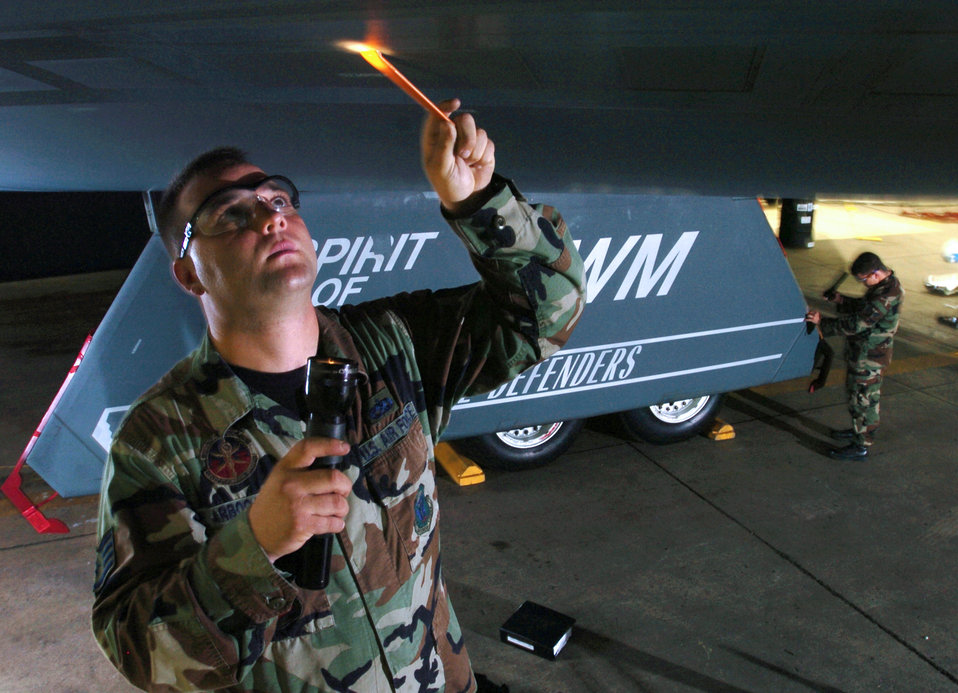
Missouri Airmen welcome challenge to keep B-2 safe

ANDERSEN AIR FORCE BASE, Guam -- Staff Sgt. Jody Arbogast (foreground) and Senior Airman Bruce Vaughn look for scratches or chipped paint on a B-2 Spirit bomber deployed here. The Spirit's skin has to be kept in pristine condition to help maintain its stealth qualities. Deployed B-2 bombers provide U.S. Pacific Command officials a continuous bomber presence in the Asia-Pacific region, enhancing regional security and the U.S. commitment to the Western Pacific. The Airmen are low observable technicians from the 509th Maintenance Squadron at Whiteman Air Force Base, Mo.